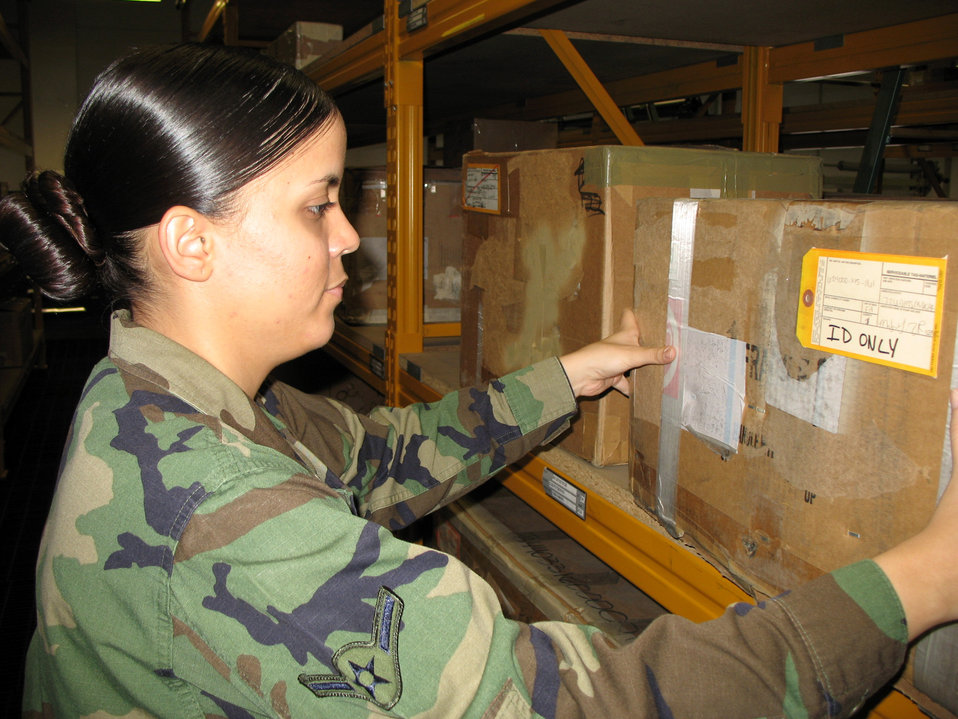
Serving through the season: Amn. Marilyn Torres

Airman Marilyn Torres stocks shelves filled with aircraft parts and supplies at Spangdahlem Air Base, Germany, Dec. 8. Shelving items is one of the final steps after processing of forms and input into a computer database. Her efforts ensure heavy aircraft assigned to the 726th Air Mobility Squadron are mission-ready.